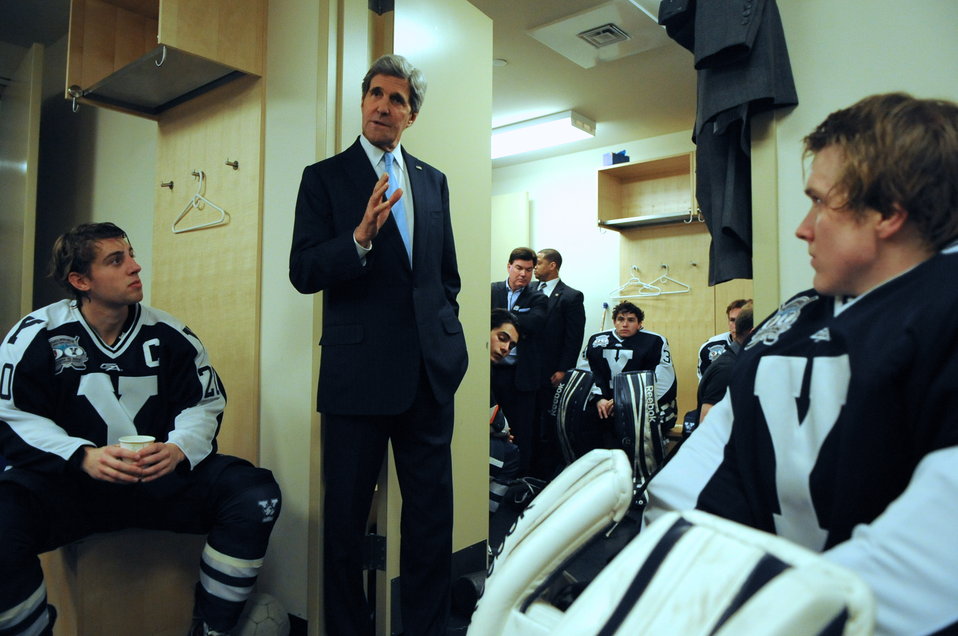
Secretary Kerry Addresses Yale Hockey Team Before Game Against Harvard

U.S. Secretary of State John Kerry addresses members of the Yale University men's varsity hockey team before his alma mater played Harvard University in a game at Madison Square Garden in New York, NY, on January 11, 2014.